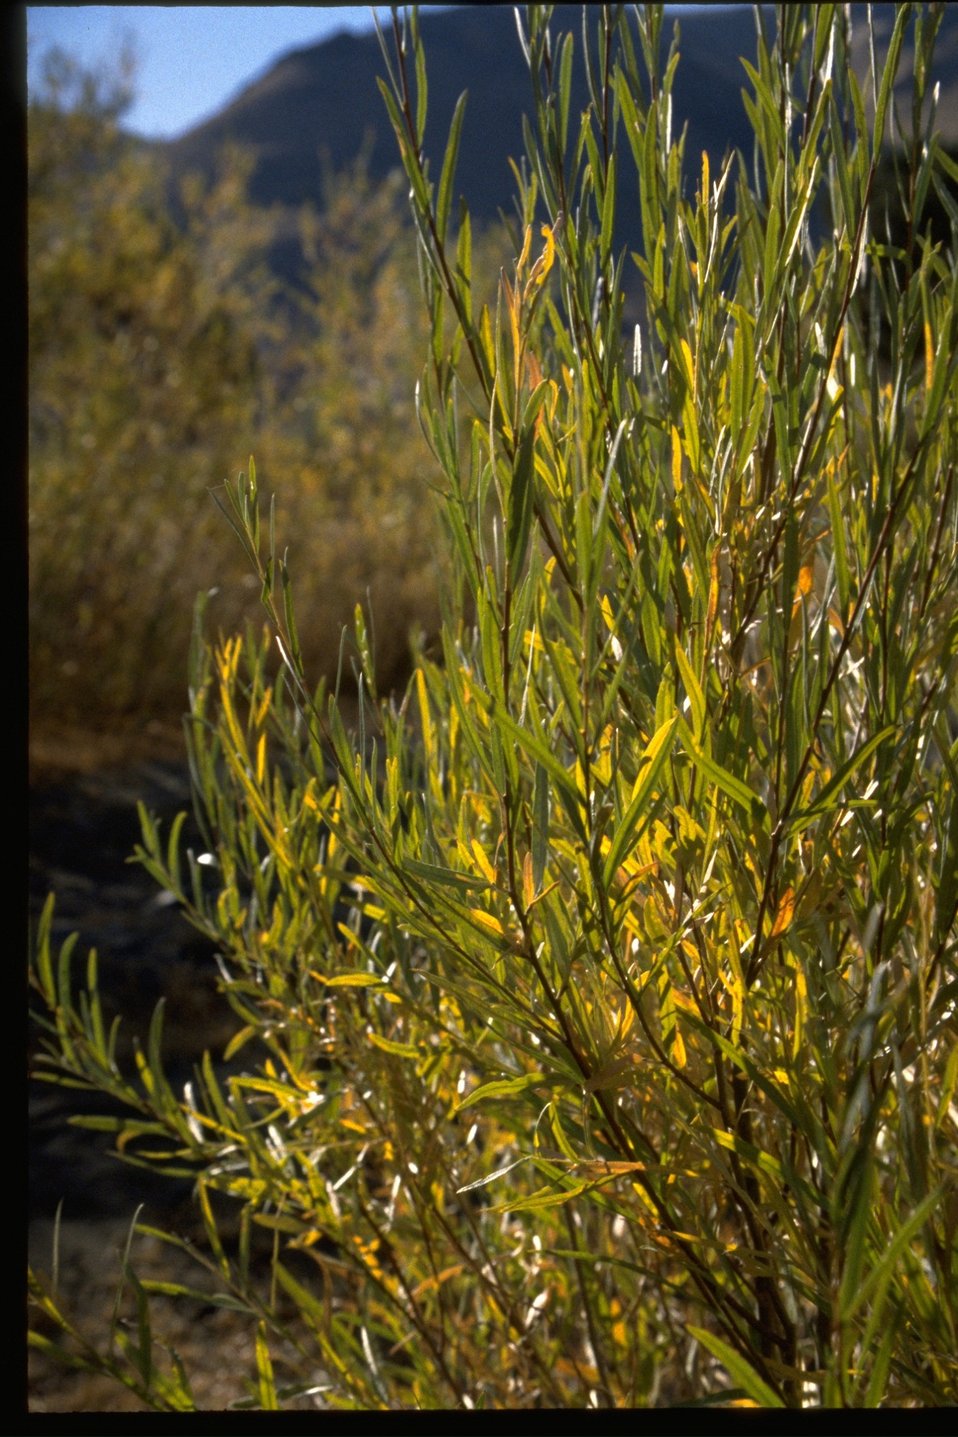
Riparian vegetation along the bank of the John Day River, near Bridge Creek.